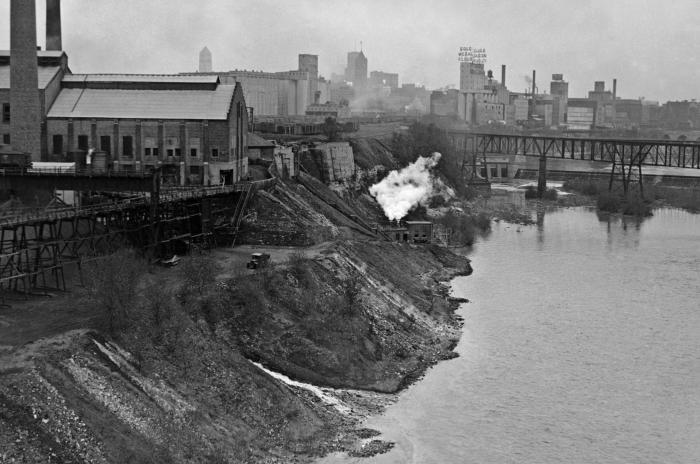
This historic photograph taken on May 11, 1933, depicted the former Minneapolis Gas Light Co. along the banks of the Mississippi River. Note the industrial outlet emitting waste into Mississippi River in Minneapolis.